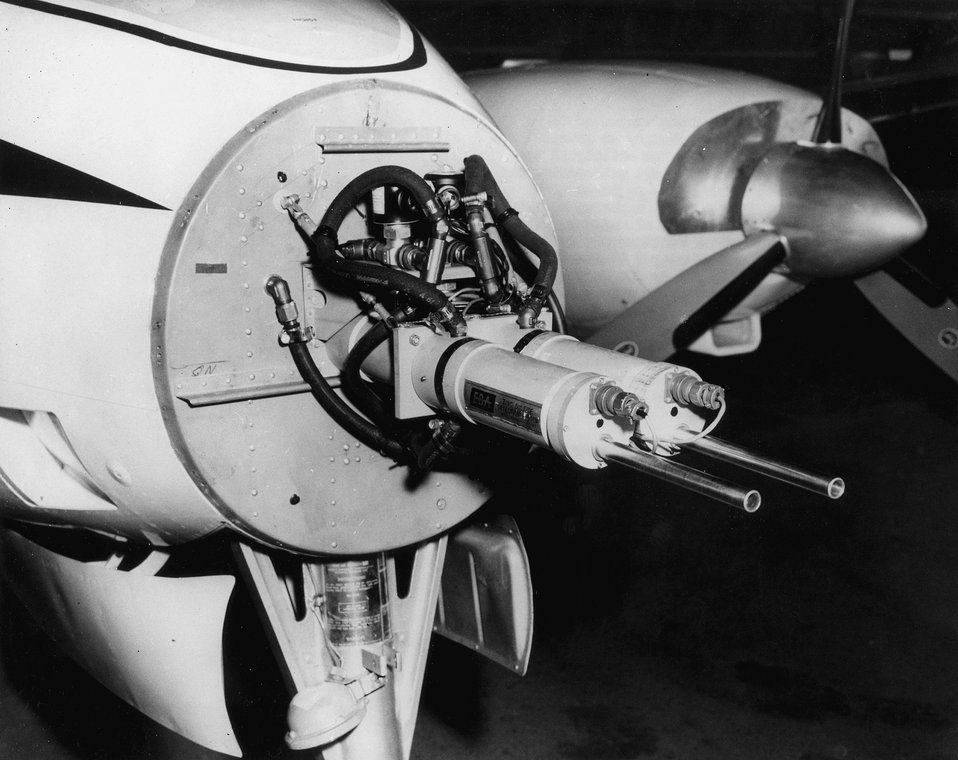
Measurement of tracers from airborne platforms is necessary to extend the height and range of studies on the ability of the atmosphere to diffuse and transport pollutants. c. 1968